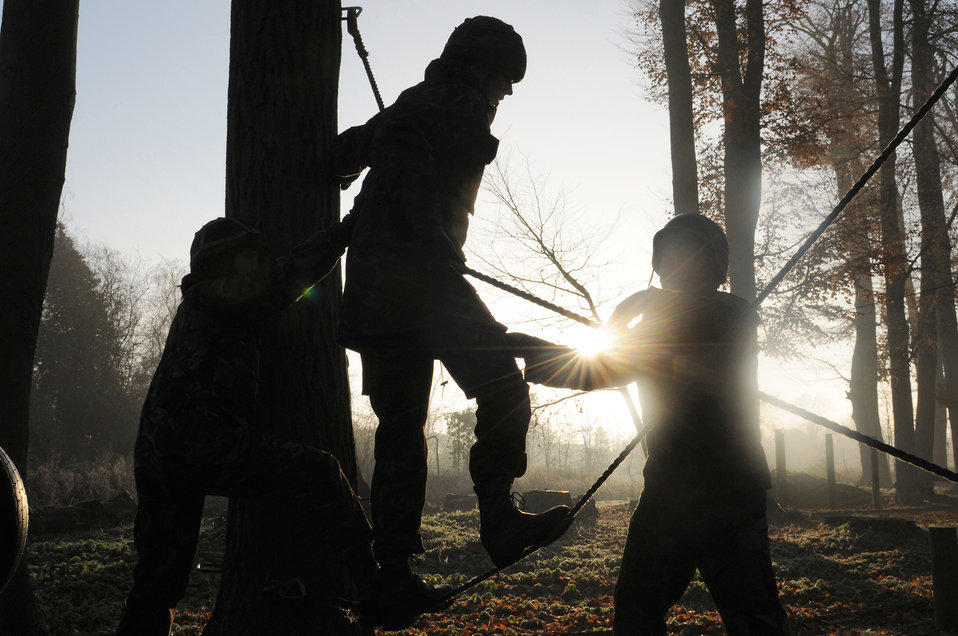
Think like a spider

Airmen from Royal Air Force Mildenhall, England, and RAF Marham, England, help a teammate cross a set of ropes at the low-ropes course during a joint training day Dec. 6, 2010, at RAF Marham. This activity required leadership and mental and physical strength of participants to get all team members to the finishing point.